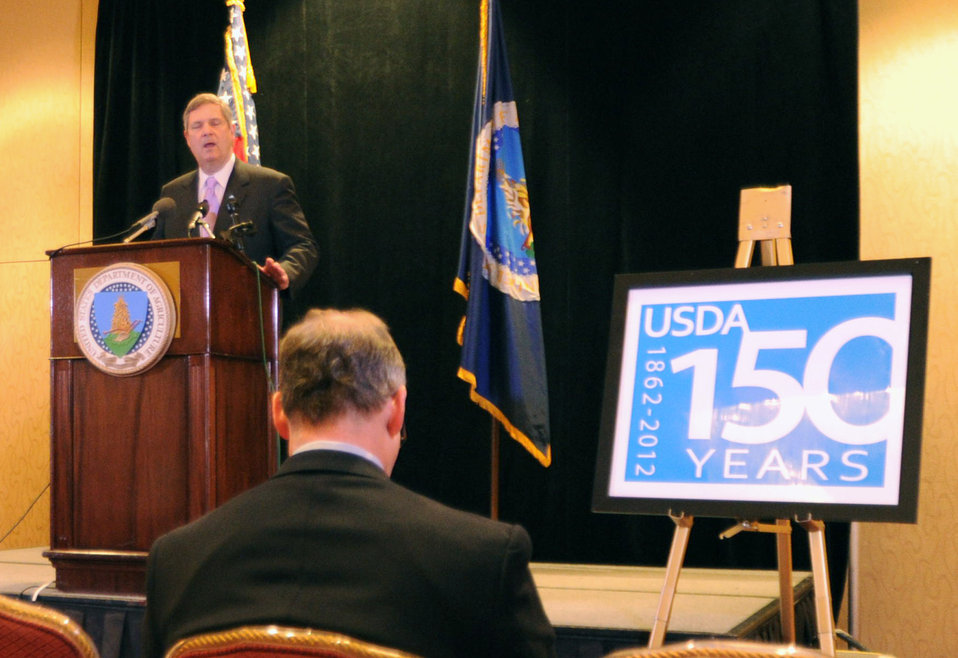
Agriculture Secretary Tom Vilsack speaking at a press conference following his remarks at the 2012 Agricultural Outlook Forum, “Moving Agriculture Forward” in Arlington, VA.. on Thursday, February 23, 2012.